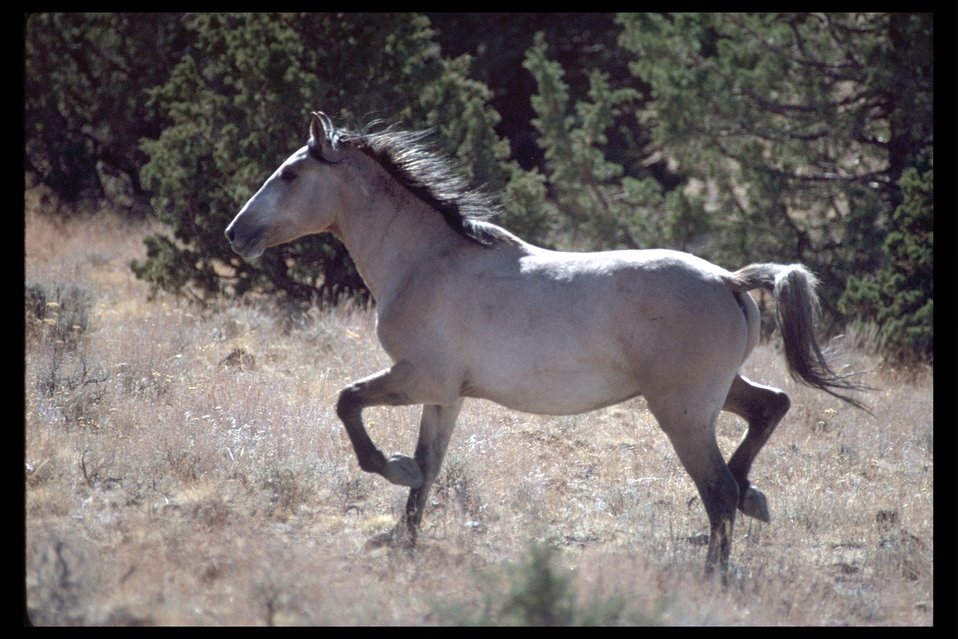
Kiger mustang stallion, "Buttermilk," with Grulla coloring on Kiger HMA.